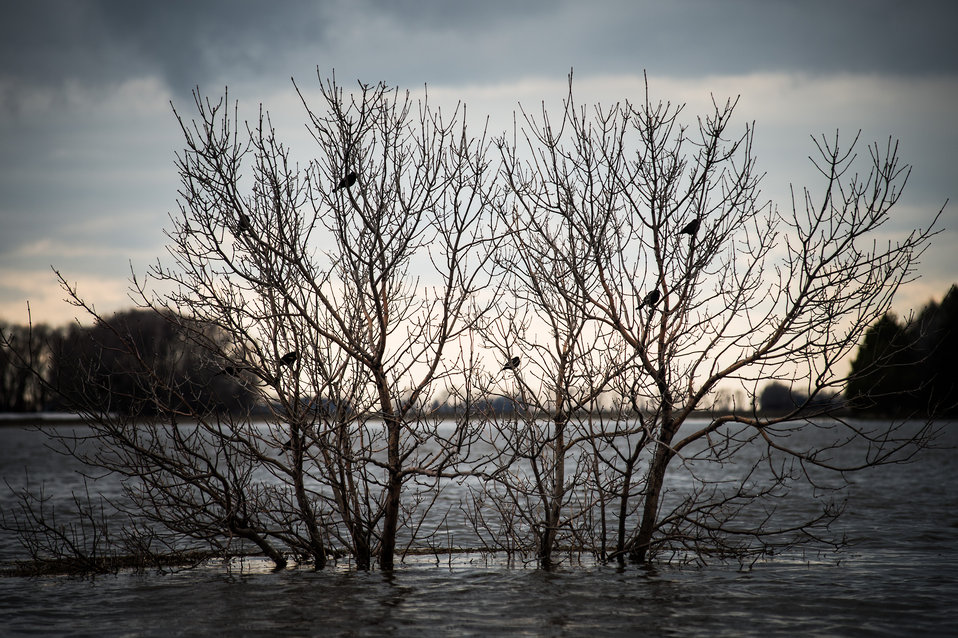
Trees in flooded farmsteads along the Forest River become the only dry perch for birds in this part of the Red River basin, in North Dakota, on Wednesday, May 1, 2013. To learn about the Red River Basin Initiative, see www.mn.nrcs.usda.gov/news/features13/RRBI.html.